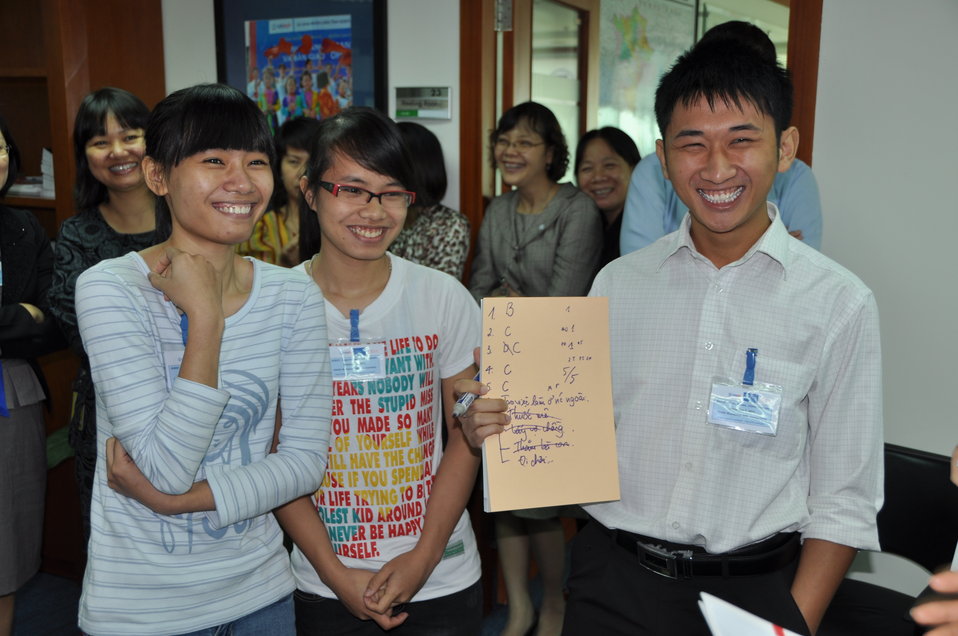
USAID 50th Anniversary Open House, USAID Vietnam